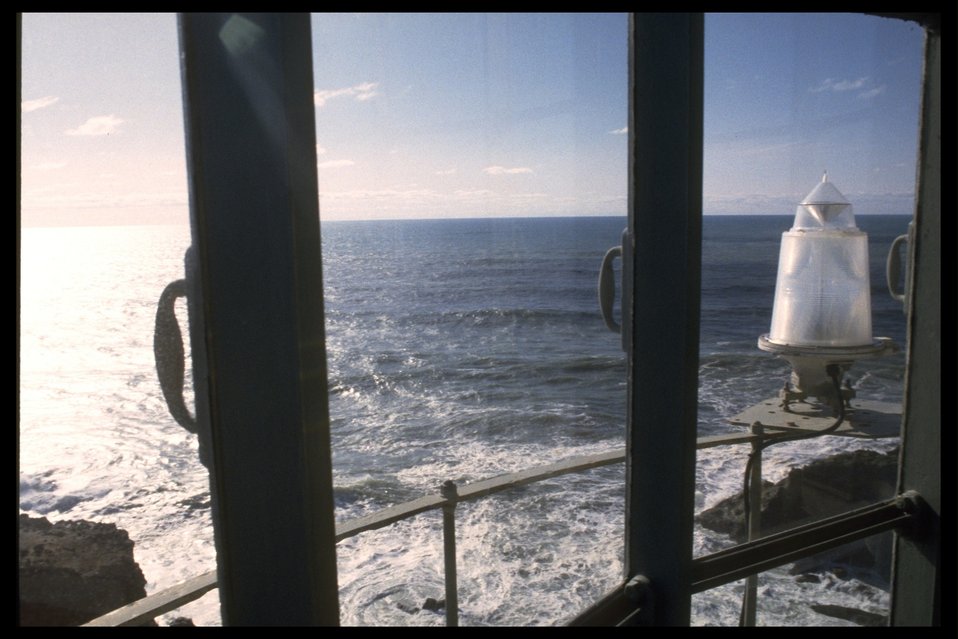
View from Yaquina Head Lighthouse lens area.